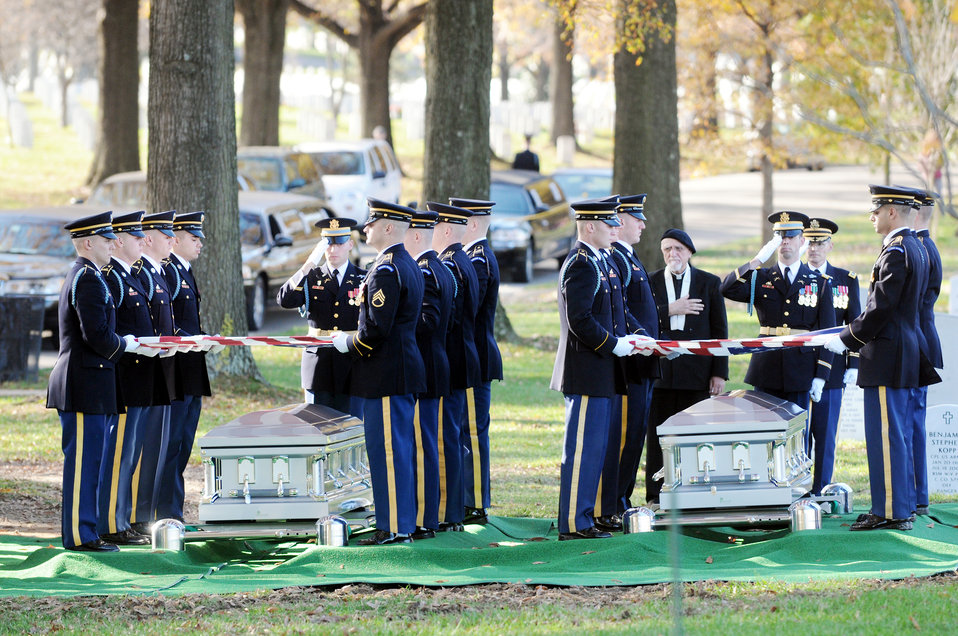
Funeral highlights search for missing servicemembers

Two high ranking military members render a salute as the honor guard prepare the flags to present to family members of members of the World War II B-25 crew that was lost Dec. 5, 1942 near Papua, New Guinea, at an interment ceremony at Arlington National Cemetery in Virginia.